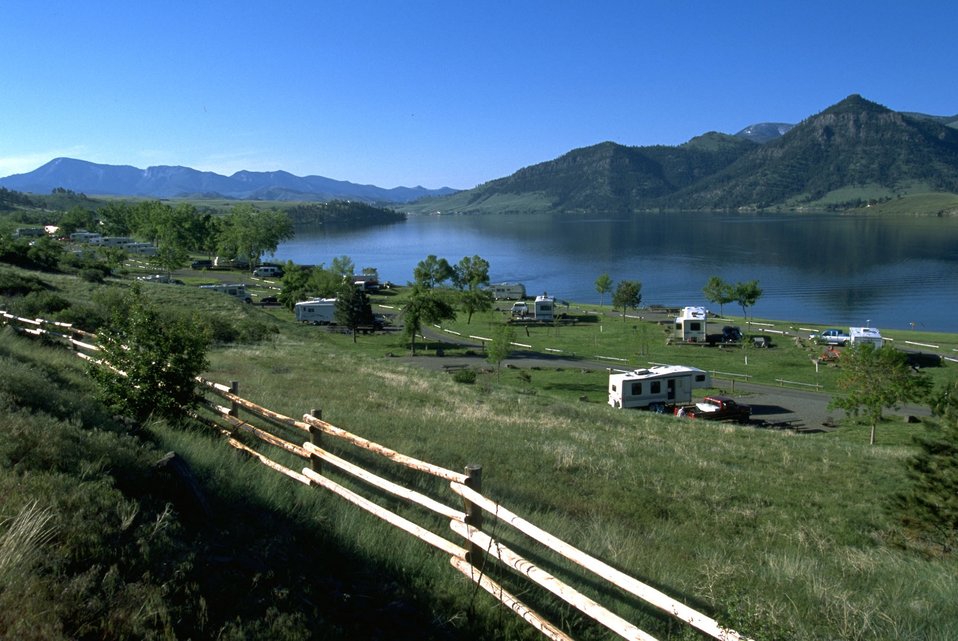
View of the Lake and camping area at Holter Lake Recreation Site